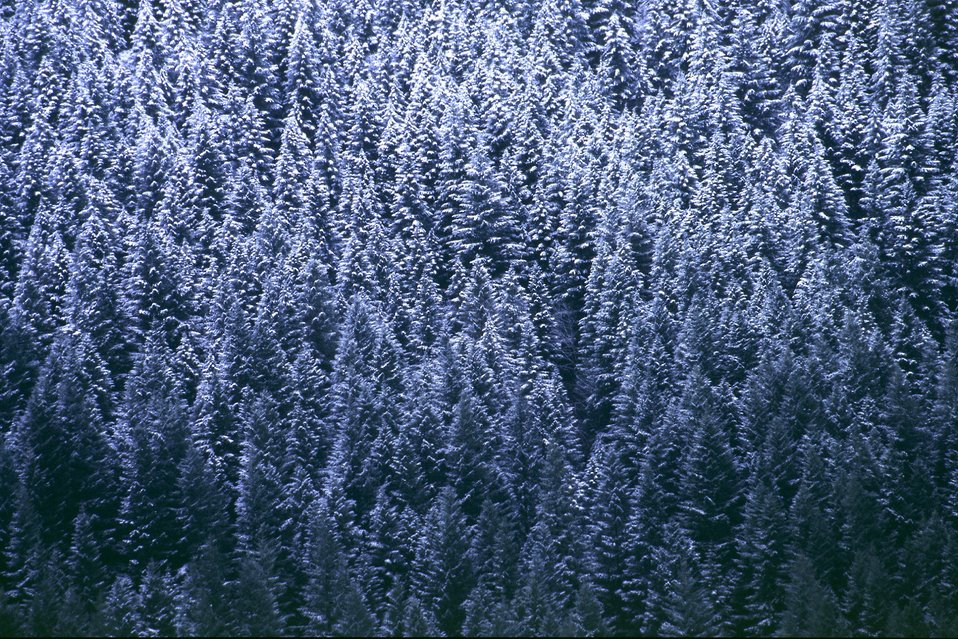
Mid Winter forest scene in the Mollala Corridor.